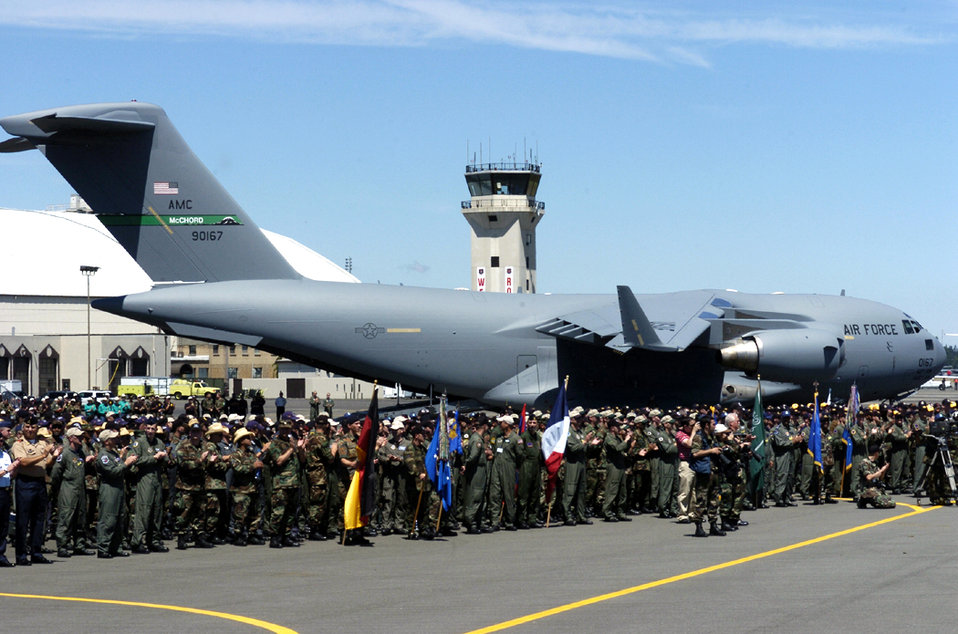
Premier air mobility competition kicks off

MCCHORD AIR FORCE BASE, Wash. -- Combat airlift teams worldwide gather here June 19 for opening ceremonies of Rodeo 2005. About 1,800 people are participating competitively or through support activities. More than 200 international team members and observers are also present. The Rodeo runs through June 24.